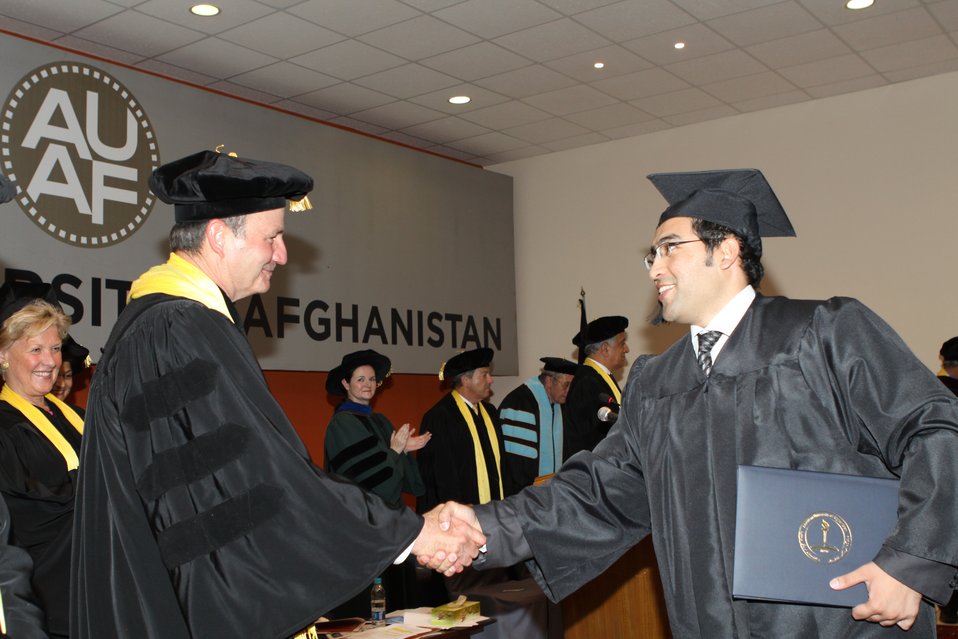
100526 AUAF Graduation 305